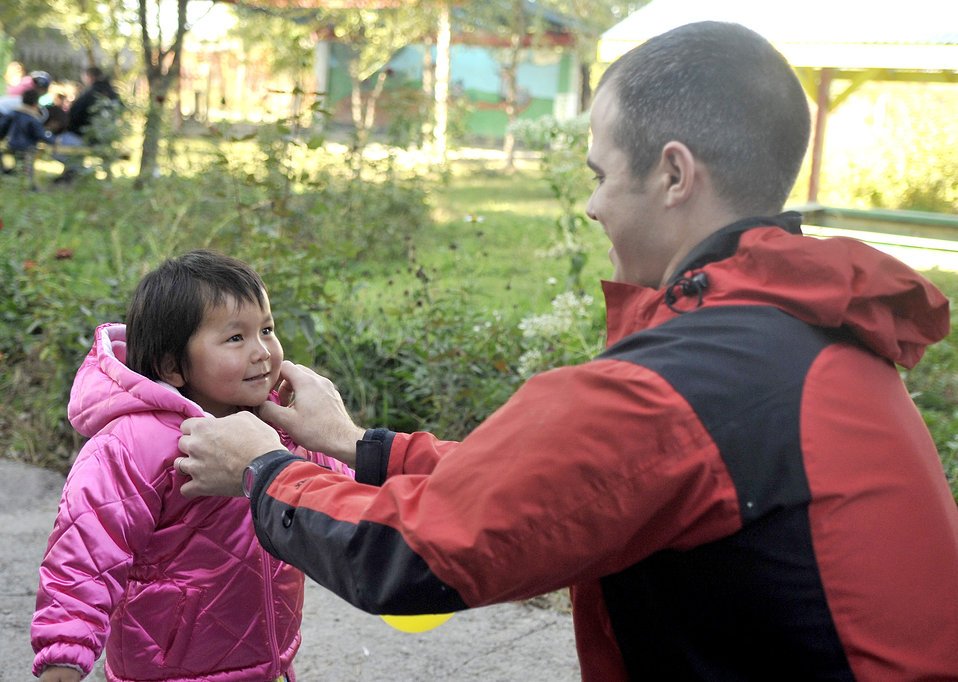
Kyrgyzstan school

1st Lt. Mike Capelle fits a winter coat on a girl Oct. 18, 2010, at the Solnyshko school near Vasilievka, Kyrgyzstan. Several Airmen who are deployed to the Manas Transit Center, Kyrgyzstan, visited the school to deliver cold weather items and spend time with the kids.